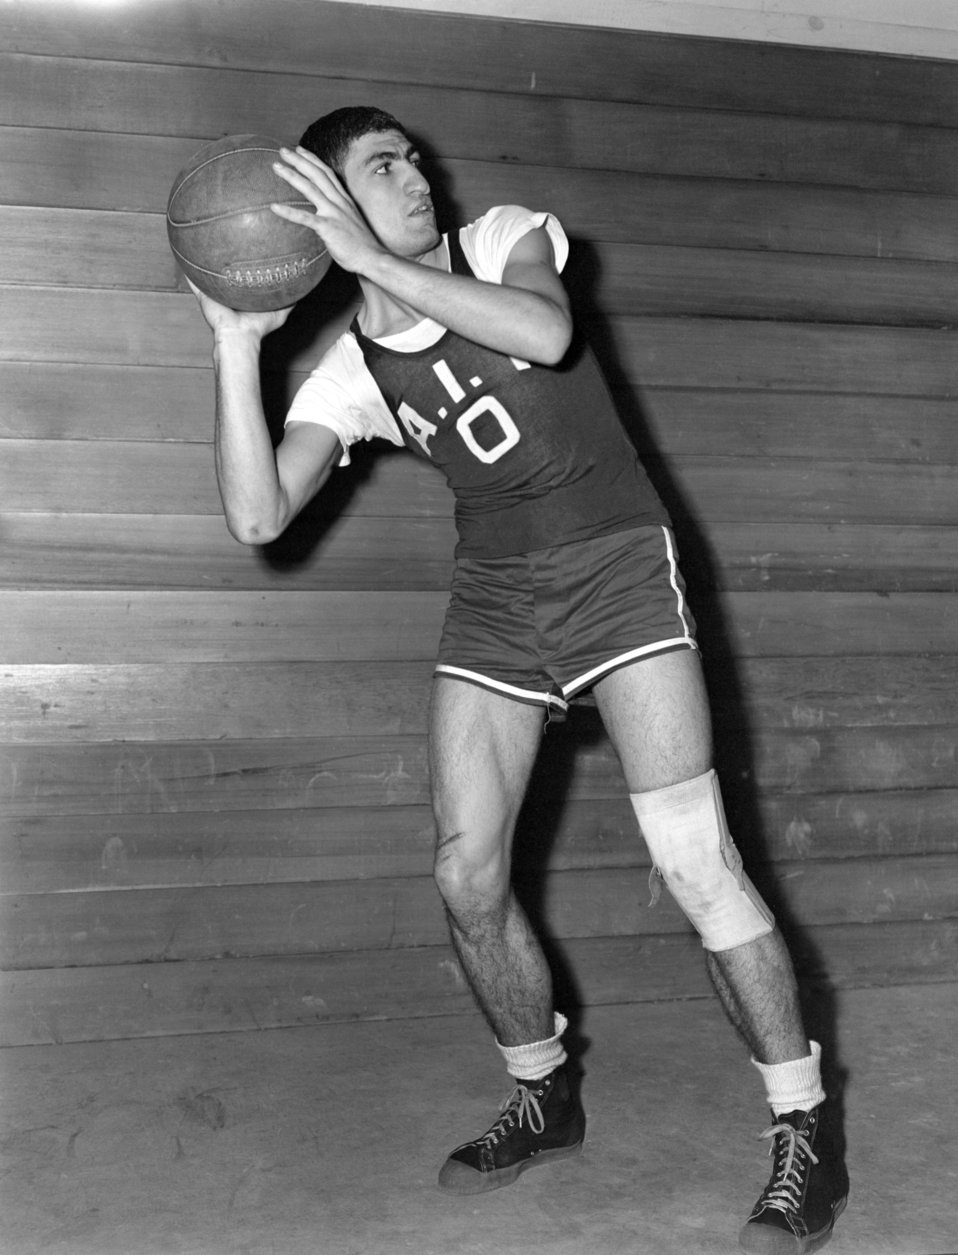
Basketball A.I.T. Oak Ridge 1947

3280-3a DOE photo Ed Westcott 1-29-1947 Oak Ridge Tennessee